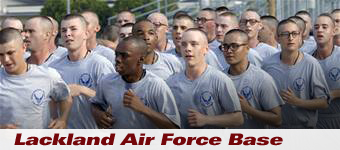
Lackland Air Force Base spotlight

Lackland Air Force Base heritage spotlight .